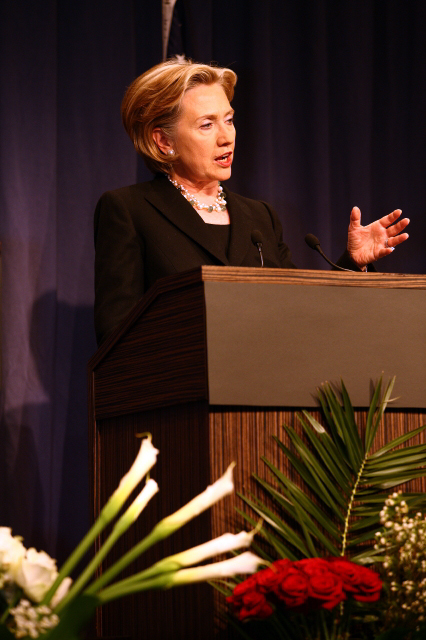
Press Conference With Russian Foreign Minister

Press conference after dinner meeting between U.S. Secretary of State Hillary Rodham Clinton and Russian Foreign Minister Sergey Lavrov in Geneva, Switzerland March 6, 2009.